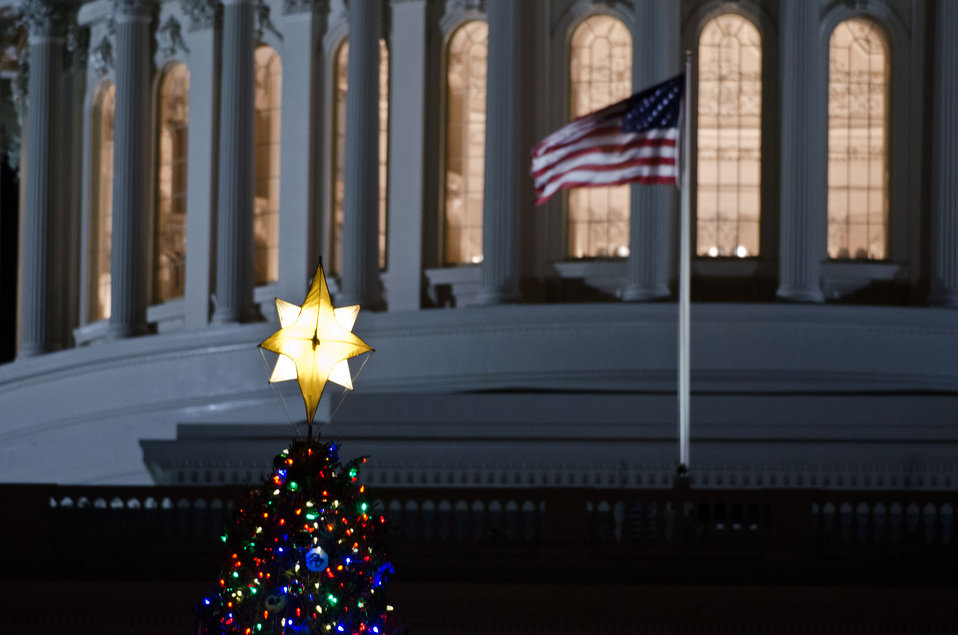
The lights of the 2012 U.S. Capitol Christmas Tree from the Blanco Ranger District of the White River National Forest near Meeker, CO; and decorated with hand-made ornaments, was switched on by Colorado Springs high school student Ryan Shuster and House Speaker John Boehner, on Tuesday, Dec. 4, 2012 at the U.S. Capitol in Washington, D.C. Since November, the tree visited dozens of cities across the country as it made its way arriving here on Nov.26, 2012. The 73-foot Englemann spruce traveled from the White River National Forest in Colorado. Other representatives as well as Natural Resources and Environment Under Secretary Harris Sherman spoke during the ceremony.